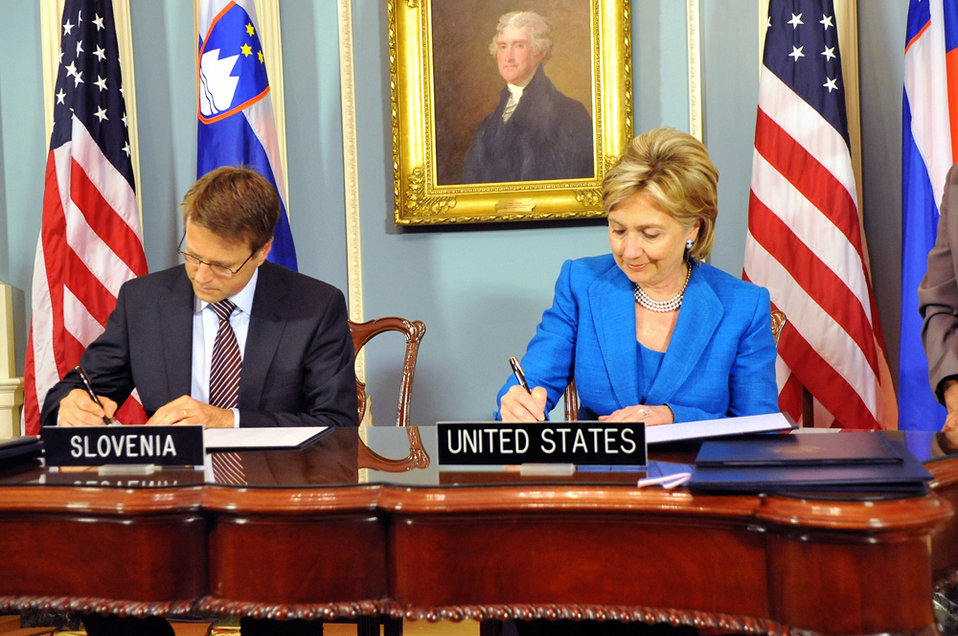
U.S.-Slovenia Signing Ceremony

Secretary Clinton participates in a signing ceremony of Protocols of Exchange of Instruments of Ratification for the U.S.-Slovenia Mutual Legal Assistance Protocol and the U.S. Slovenia Extradition Treaty, with His Excellency Samuel Zbogar, in the Treaty Room of the U.S. Department of State in Washington, DC July 29, 2009.